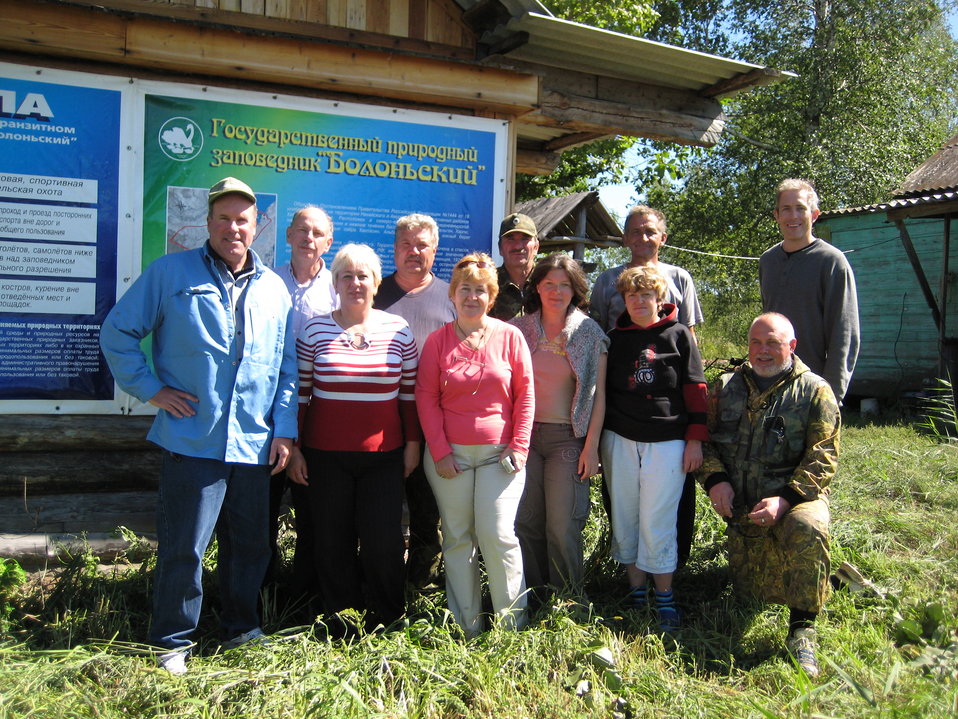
Bolonskiy Nature Reserve

Scientific exchange at Bolonskiy Nature Reserve in Russa.